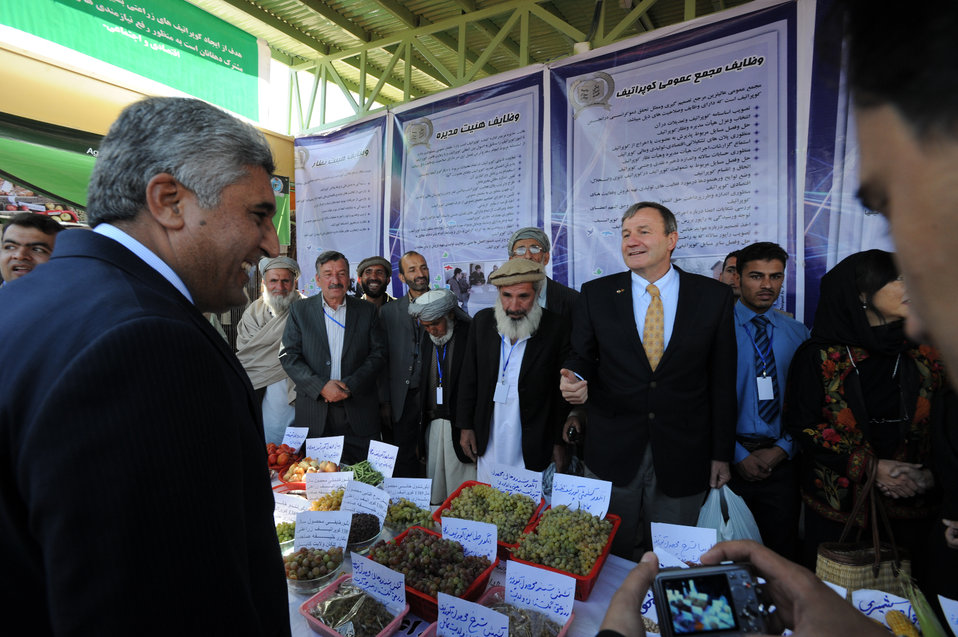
نړیوال کرنیز نندارتون د افغانستان د مخ پرودی کرنیز سکتور ښودنه کوی